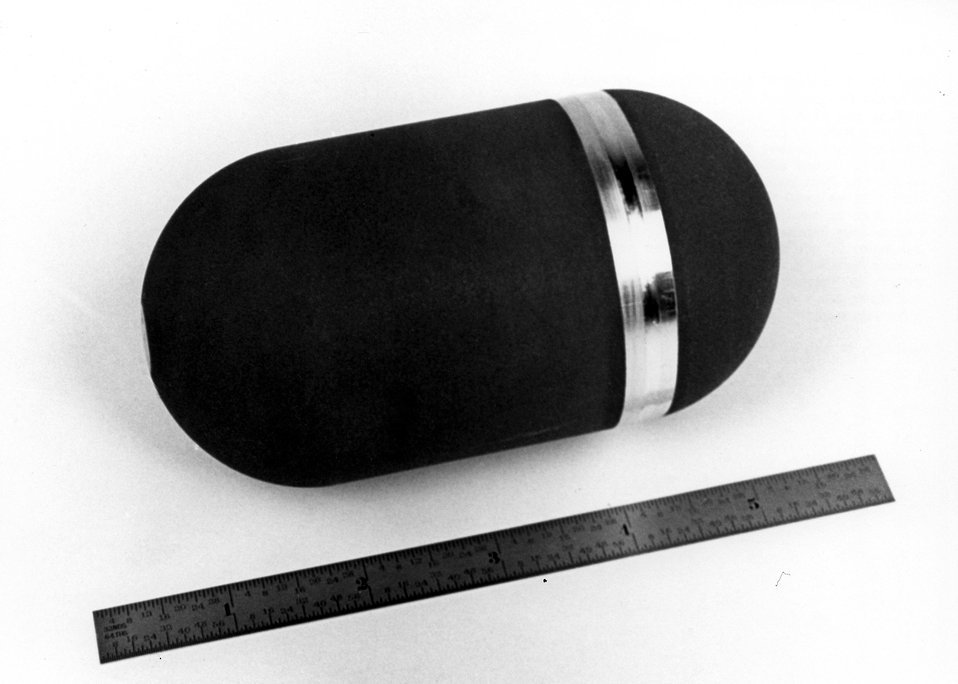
SNAP-19 Radioisotope Thermometric Generators (RTG), in orbit for about 2 years, are being modified for probing the planet Jupiter, in deep outer space.